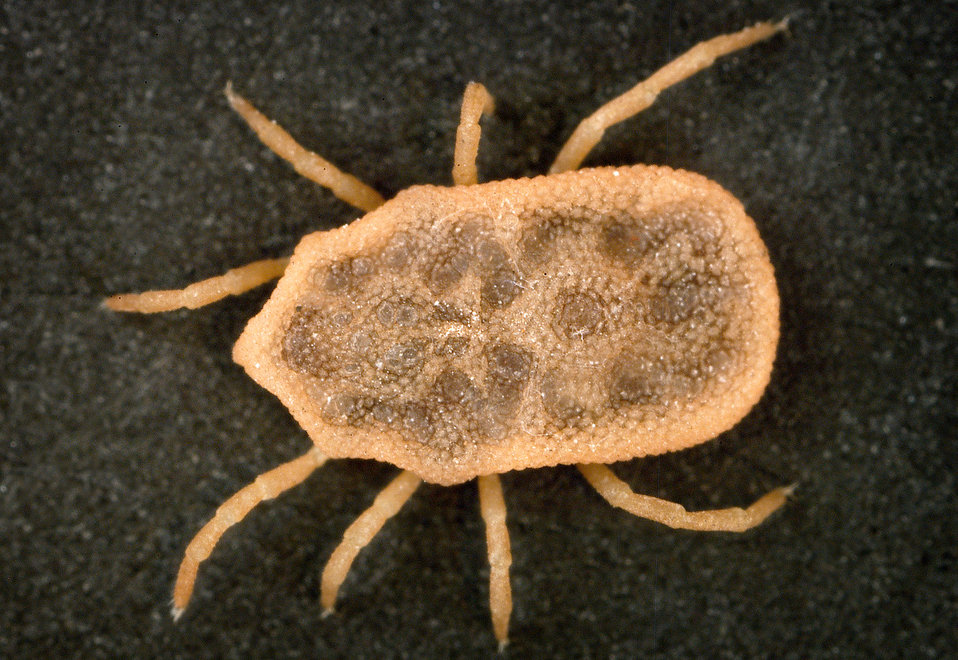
This is a dorsal view of the 'soft tick' Carios kelleyi, formerly Ornithodoros kelleyi, or the 'Bat Tick'.